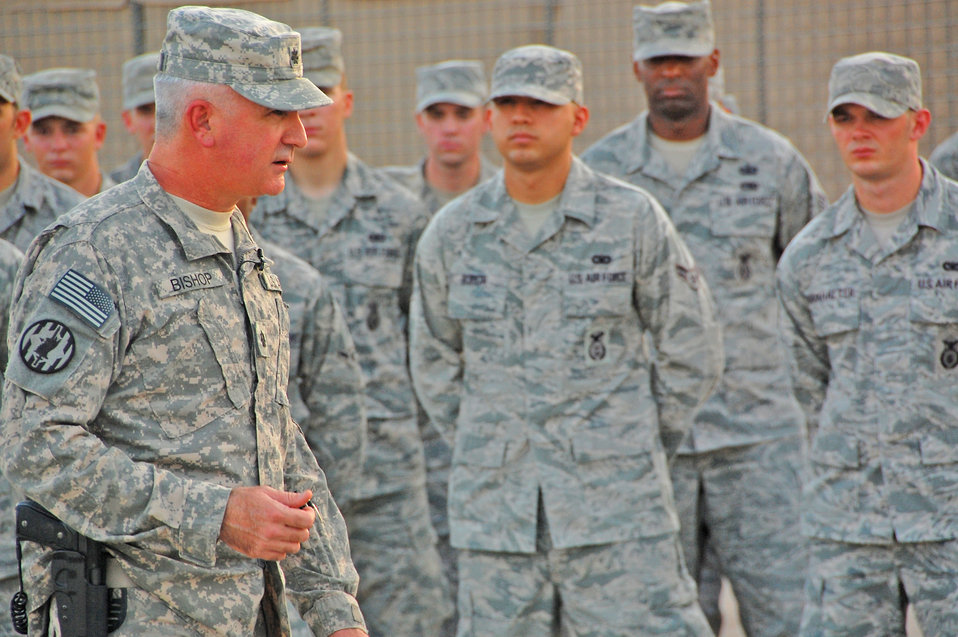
Airmen hand over visitation operations at Camp Bucca

Army Lt. Col. Brad Bishop addresses members of the 887th Expeditionary Security Forces Squadron during an end of tour ceremony Aug. 10 at Camp Bucca, Iraq. The Airmen are members of the Air Force Detainee Visitation Team. Visitation operations allowed families of detainees access to the base to visit their loved ones. Colonel Bishop is the 168th Military Police Battalion commander.